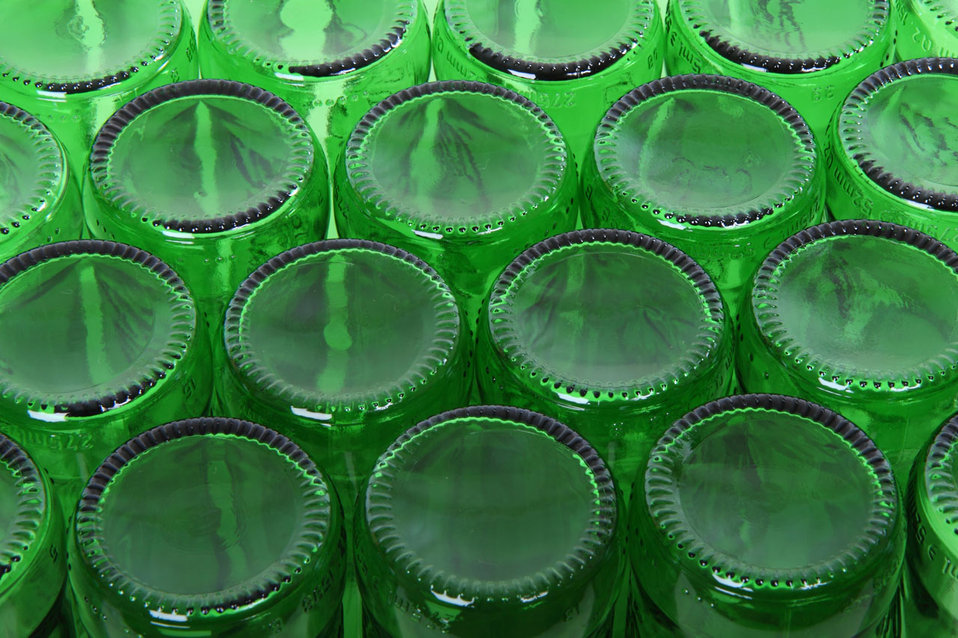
Bottle bottom background

Green bottle bottom background.